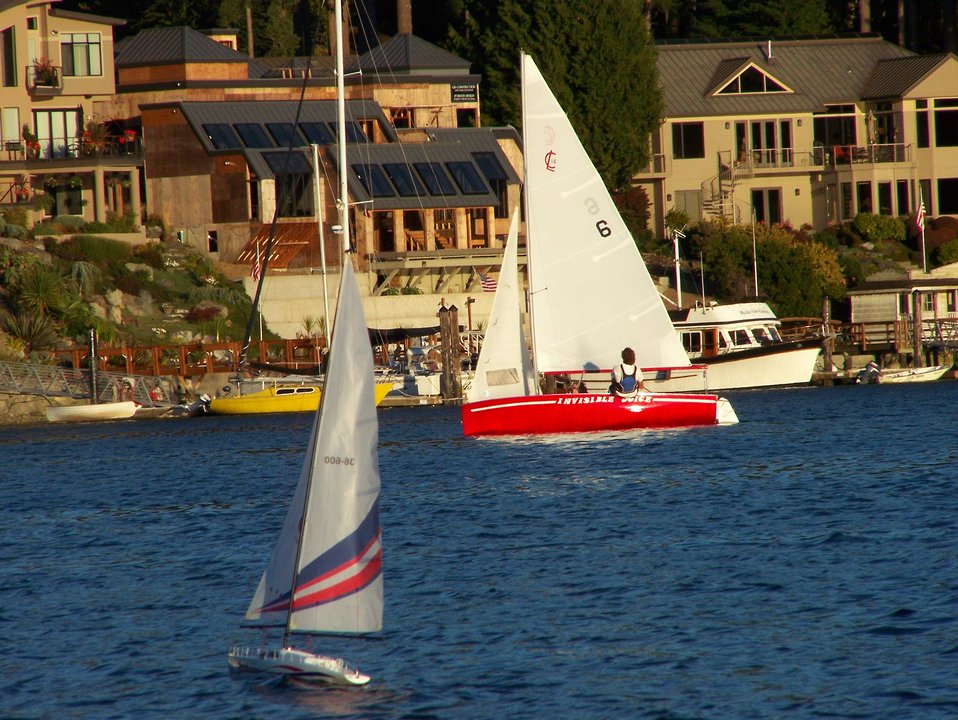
C-Lark going up wind with a model sailboat in the foreground. Taken in Gig Harbor.